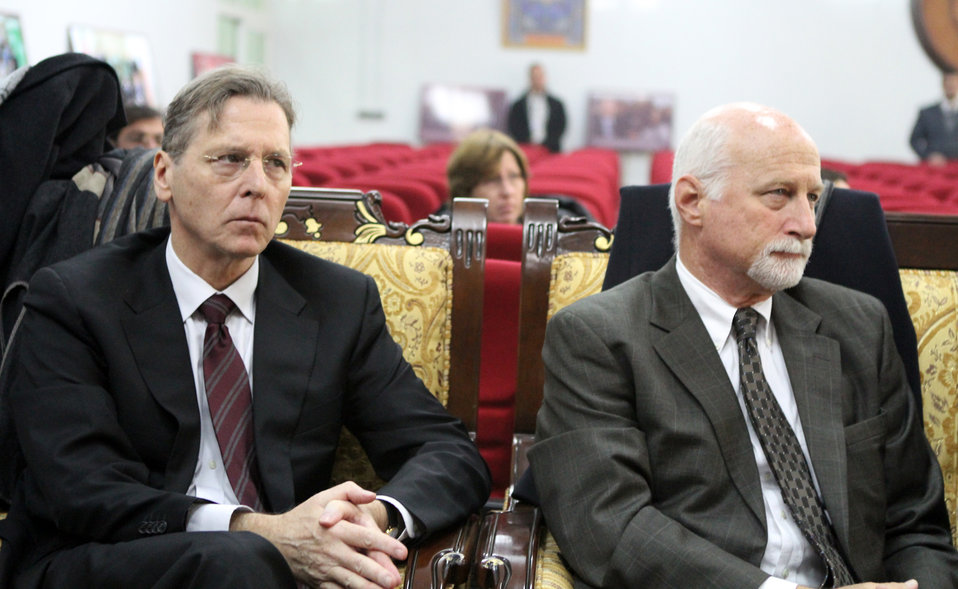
Afghanistan Final National Round of the 2013 Philip C.Jessup International Law Moot Court Competition